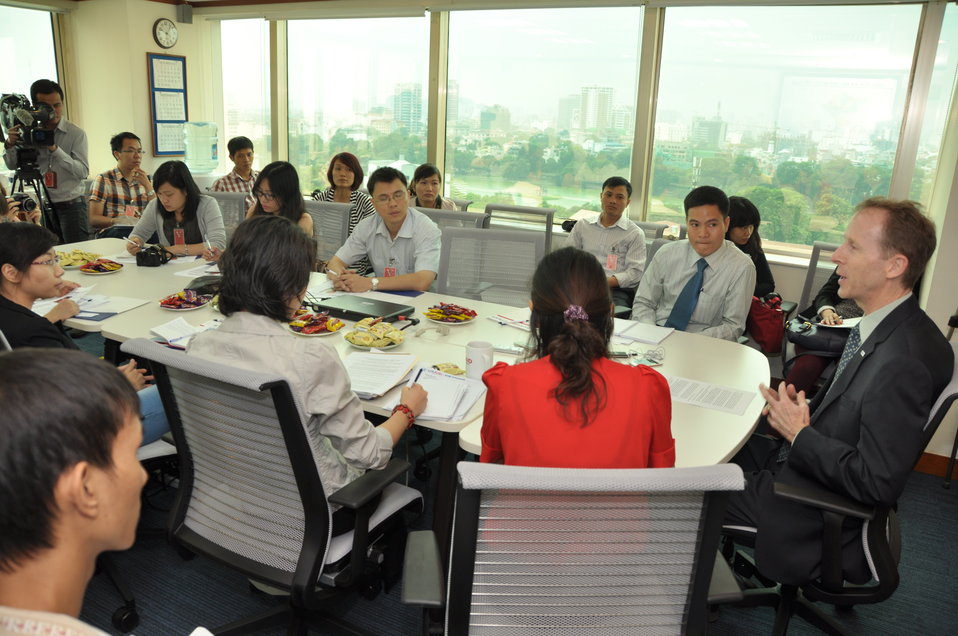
USAID Mission Director Joakim Parker announces climate change awards1251

October 17, 2012